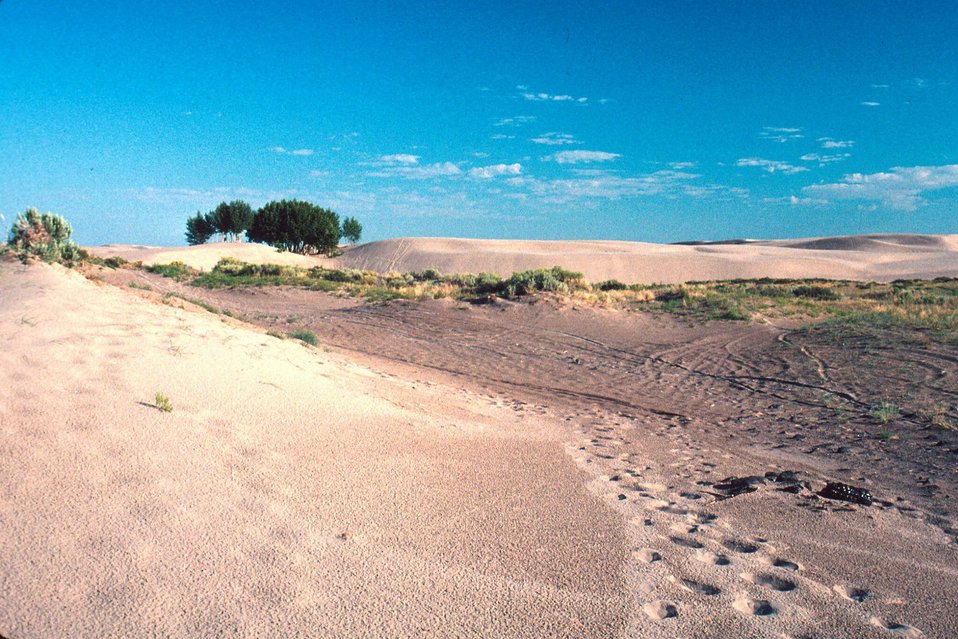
St. Anthony Sand Dunes Idaho Falls Field Office USRD Upper Snake River District